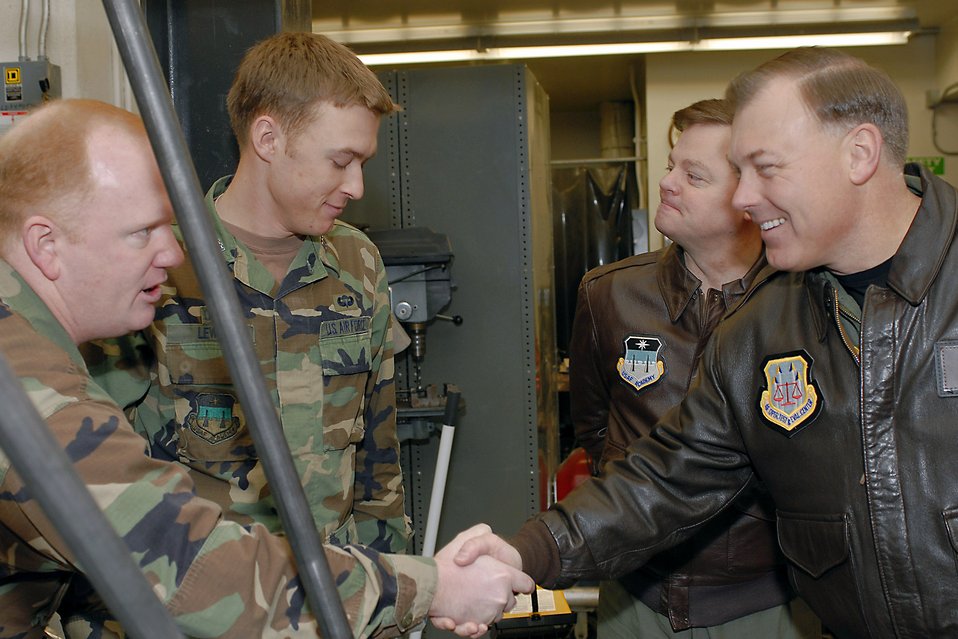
Air Force officials launch new mentoring program

Maj. Gen. Stephen T. Sargeant (right) meets and visits with U.S. Air Force Academy cadets during a March 17 visit that included a tour of Academy astronautics classes and laboratories at the Academy in Colorado Springs, Colo. General Sargeant is the Air Force Operational Test and Evaluation Center commander from Kirtland Air Force Base, N.M.